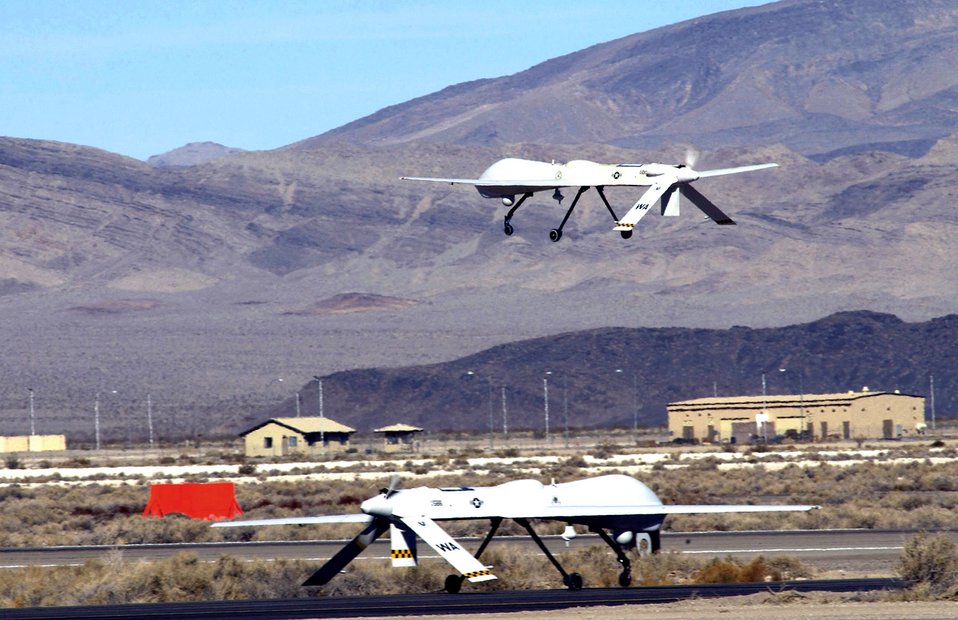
April 10 airpower summary: Predator fires missiles on enemy mortar team

An MQ-1 Predator unmanned aerial vehicle takes off in support of Operation Iraqi Freedom. The Predator provides armed reconnaissance, airborne surveillance and target acquisition for Iraq.